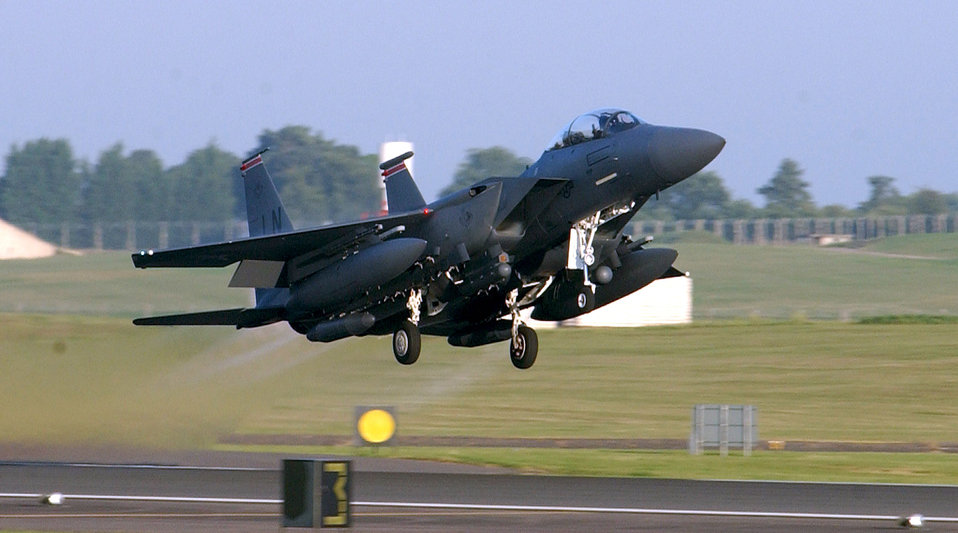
Eagle lift off

ROYAL AIR FORCE LAKENHEATH, England -- A 494th Fighter Squadron F-15E Strike Eagle takes to the skies en route to a deployment supporting Operation Iraqi Freedom.